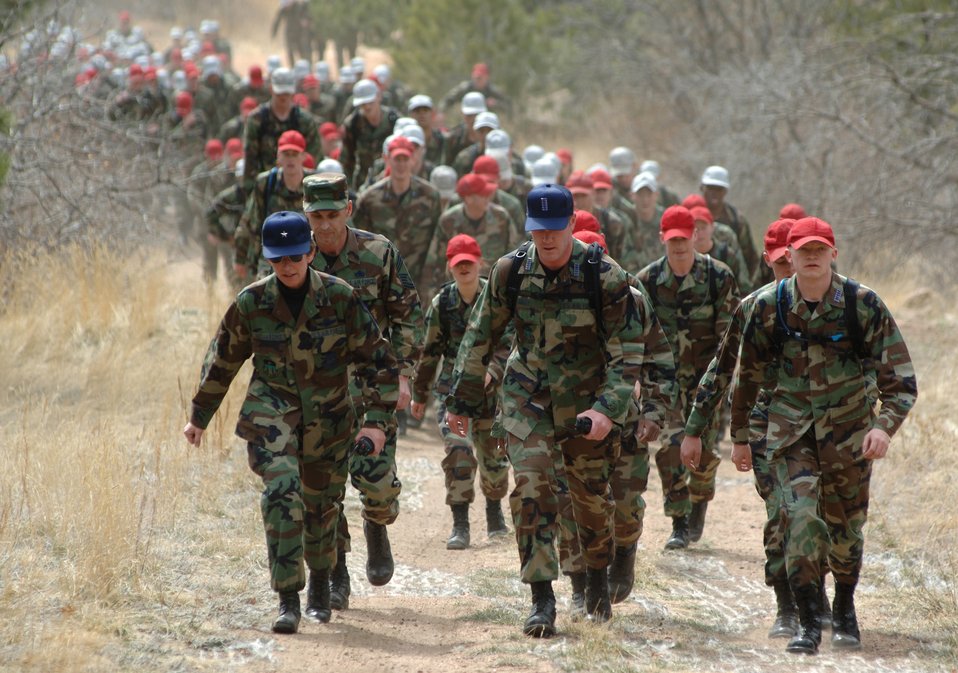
Class of 2009 formally recognized

Brig. Gen. Susan Desjardins, commandant of cadets, and Cadet 1st Class Andrew Grey, cadet wing commander, lead the march out to Jacks Valley for the Run to the Rock Saturday, March 18, 2006, at the U.S. Air Force Academy, Colo.